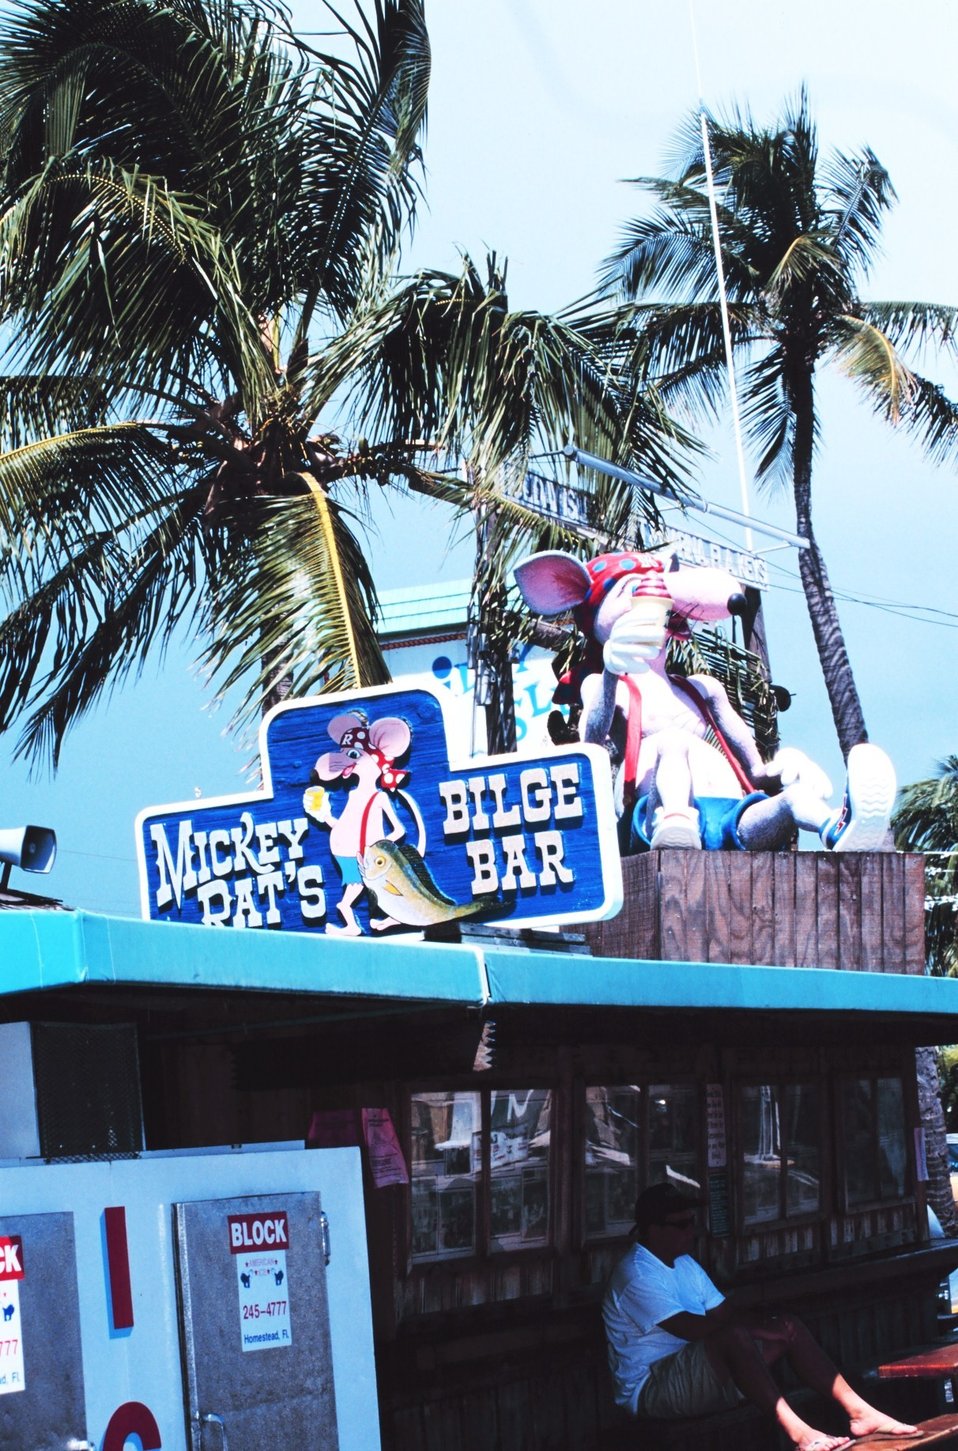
Cartoon-type characters help attract customers